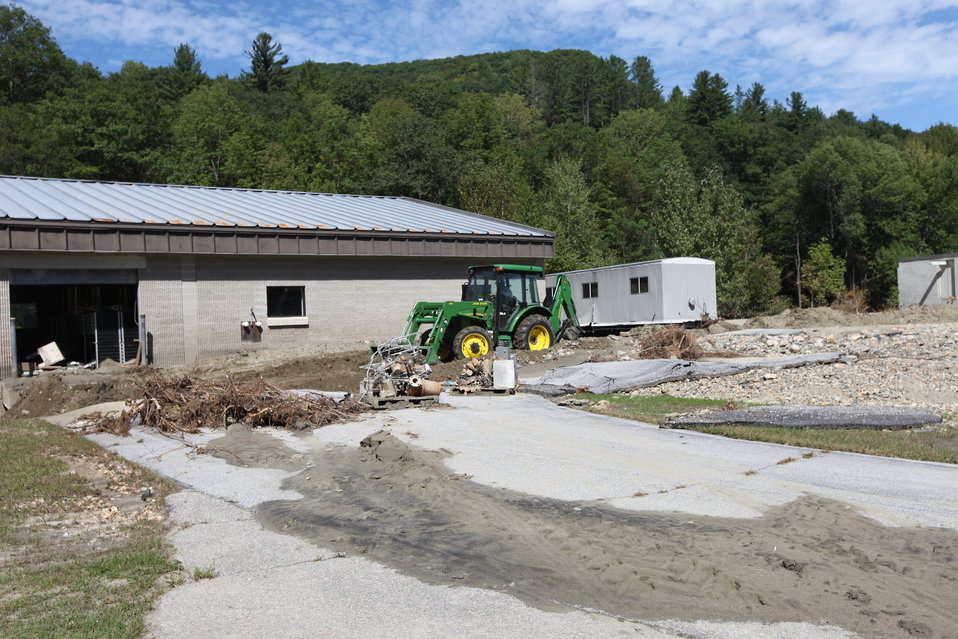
Storm damage relief at White River NFH

Heavy equipment operators came from other USFWS stations to help clean up.